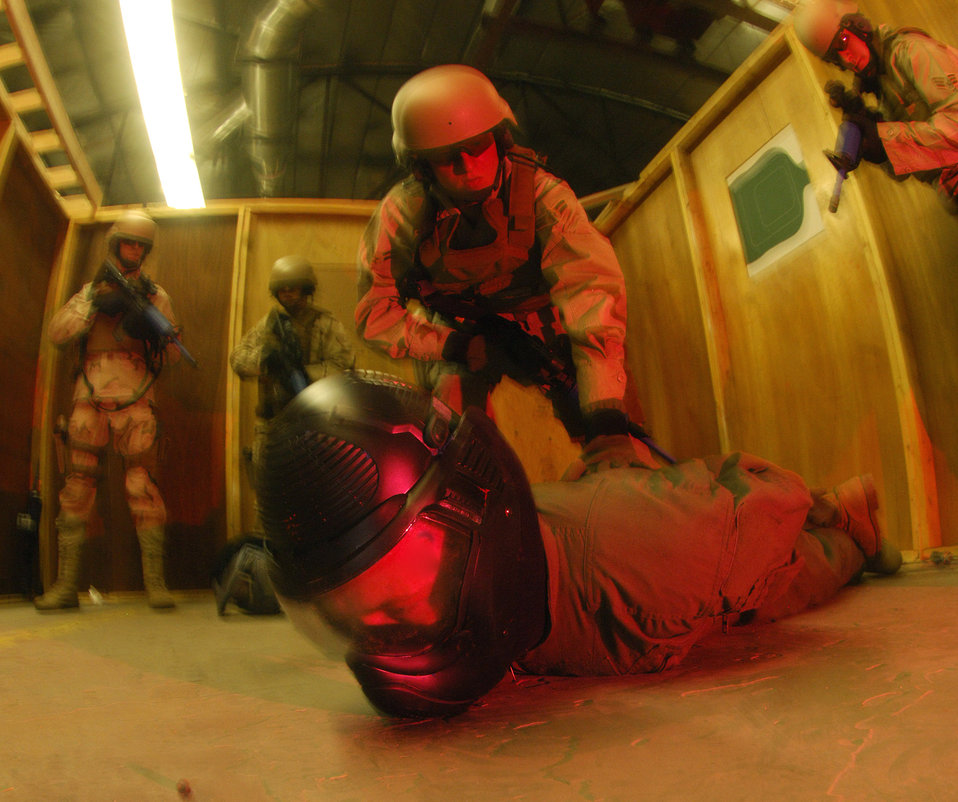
Security forces train Airmen to protect space resources

Airmen of the 90th Ground Training Squadron secure a